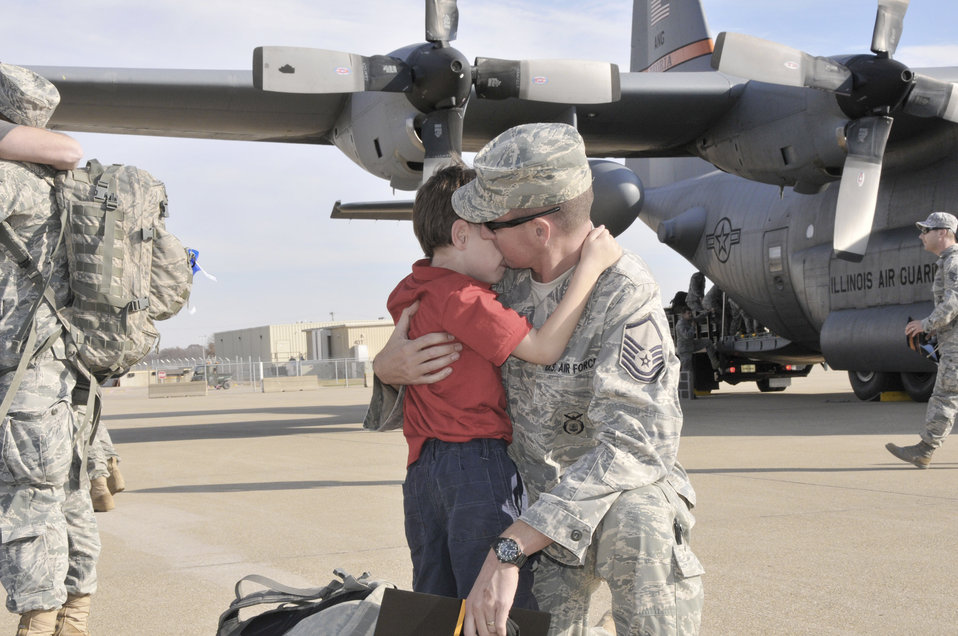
Guardsmen come home

Emotions run high as members of the Indiana Air National Guard's 181st Security Forces Squadron return home after a seven-month deployment Nov. 10, 2010, at Hulman Field Air National Guard Base. The son of Master Sgt. Shane Mullenix embraces his father on the flightline.